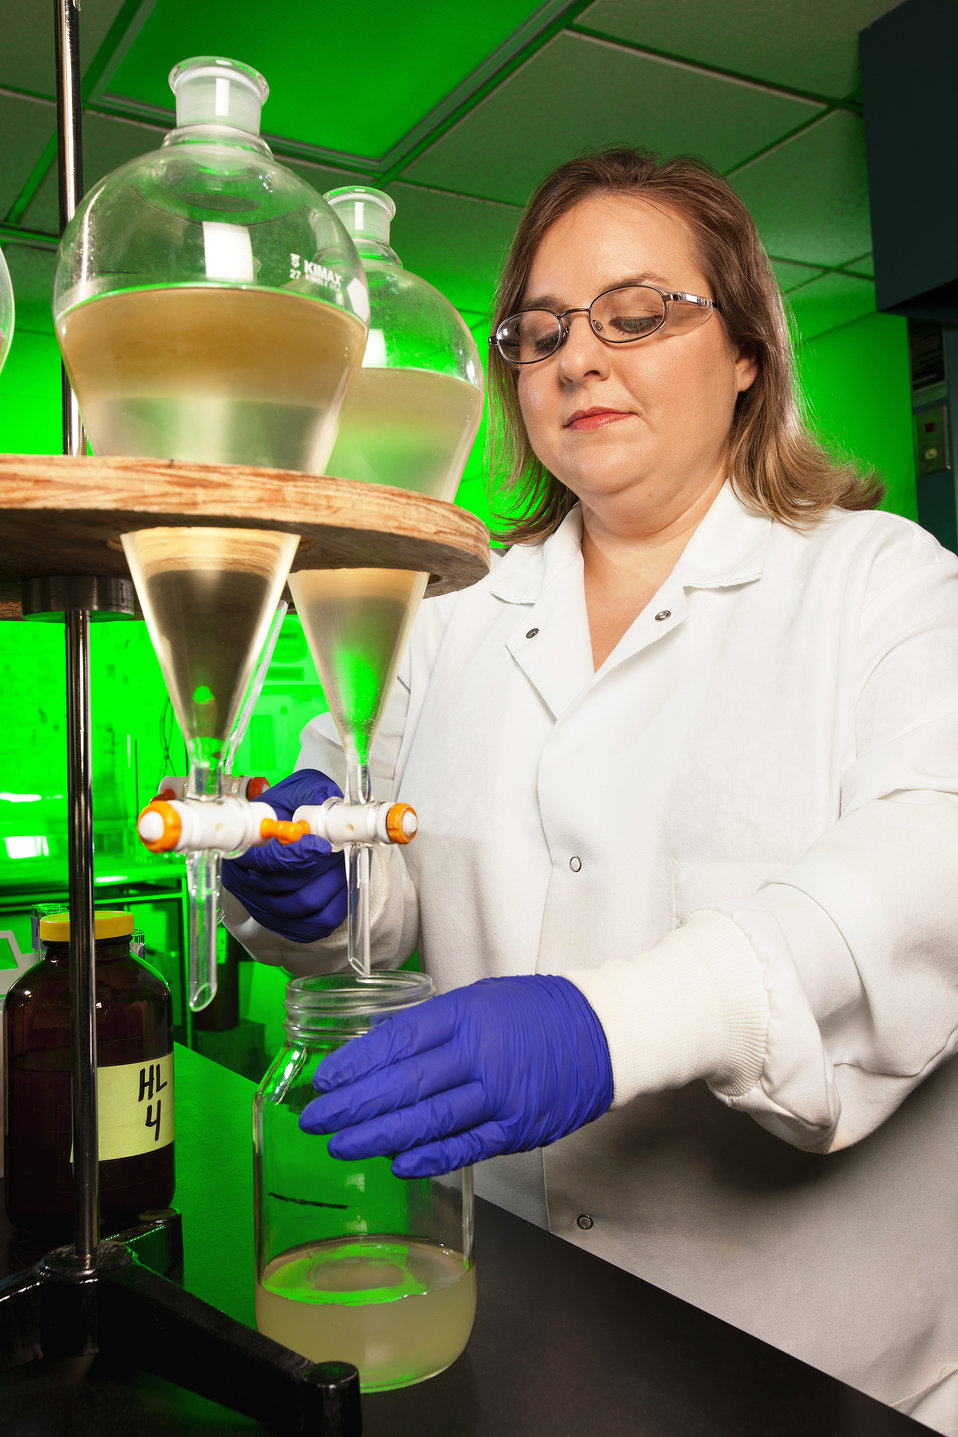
U.S. Department of Agriculture (USDA) Agricultural Research Service (ARS) technician Lisa Brooks extracts a portion of a water sample collected from a drainage ditch to test for pesticide analysis at the ARS National Sedimentation Laboratory in Oxford, MS on Sept. 1, 2013.